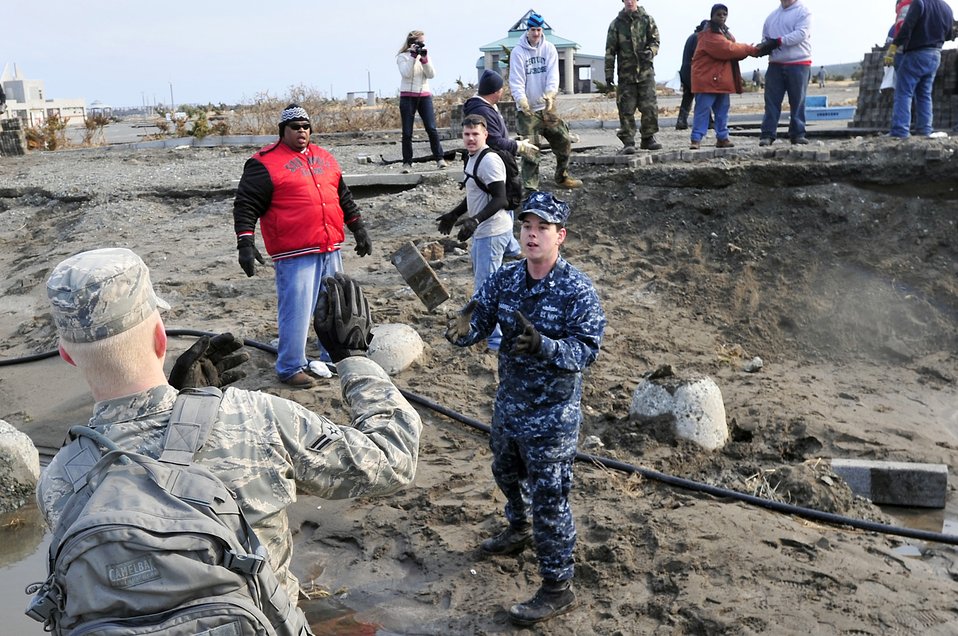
Misawa Air Base coordinates volunteer efforts

MISAWA AIR BASE, Japan -- Airmen and Sailors establish an assembly line to clean up bricks and other debris at the Misawa City fishing port and beach area Mar. 19. Daily trips of volunteers have been leaving the base since Mar. 14 to help the local community with clean-up efforts.